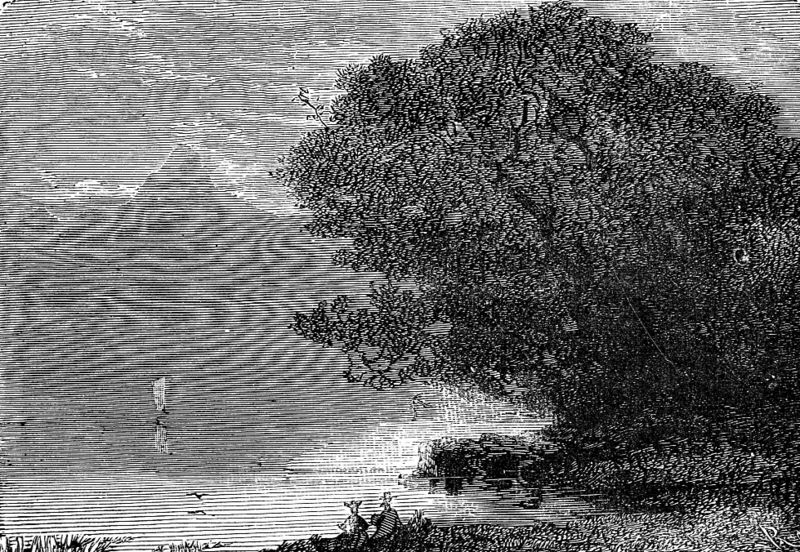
An ilustration from the novel 'In Search of the Castaways; or Captain Grant's Children' by Jules Verne drawn by Édouard Riou. Polski: Ilustracja powieści Juliusza Verne'a 'Dzieci kapitana Granta' autorstwa Édouarda Riou. Français : 'Les Enfants du capitaine Grant', Édouard Riou.